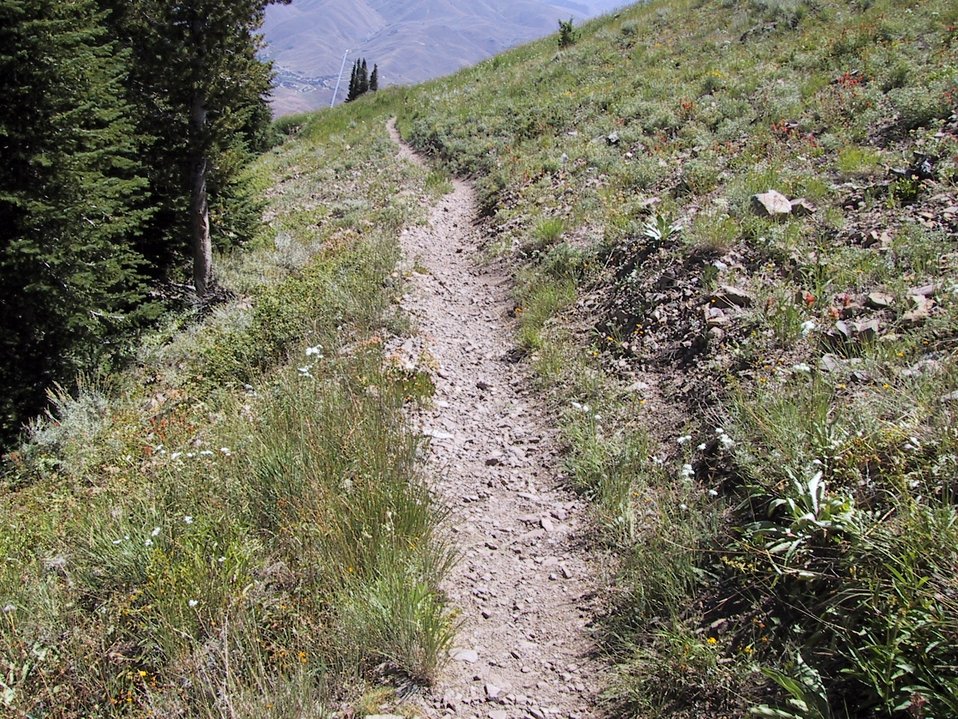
Blaine County Trails Shoshone Field Office USRD Upper Snake River District